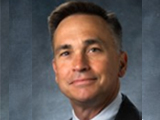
John Ward